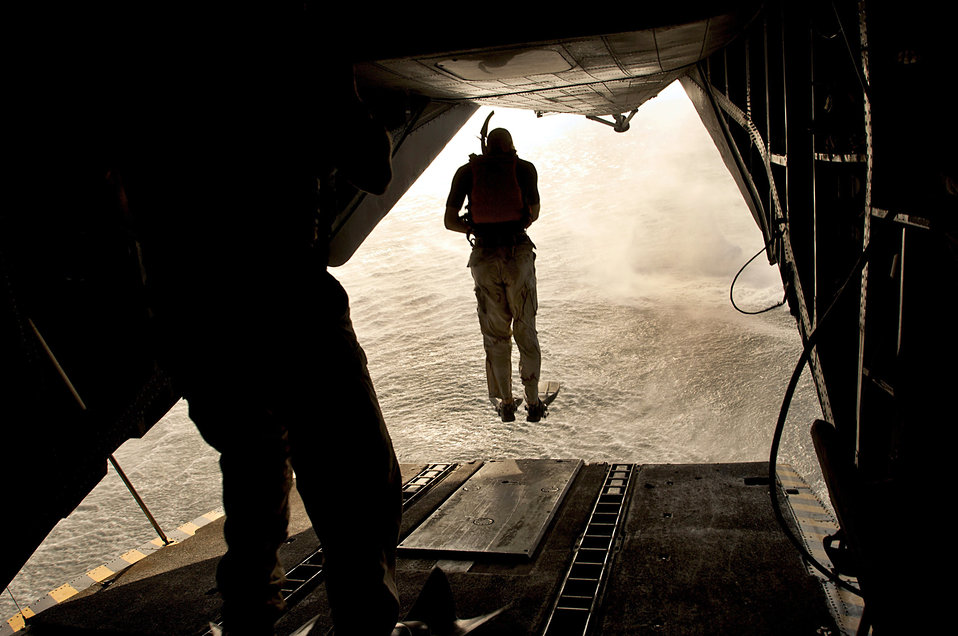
Feet first!

U.S. Air Force pararescuemen jump from a CH-53 Sea Stallion helicopter assigned to Marine Heavy Helicopter Squadron 464 during a training exercise Nov. 12 off the coast of Djibouti. The servicemembers are deployed to Combined Joint Task Force - Horn of Africa.